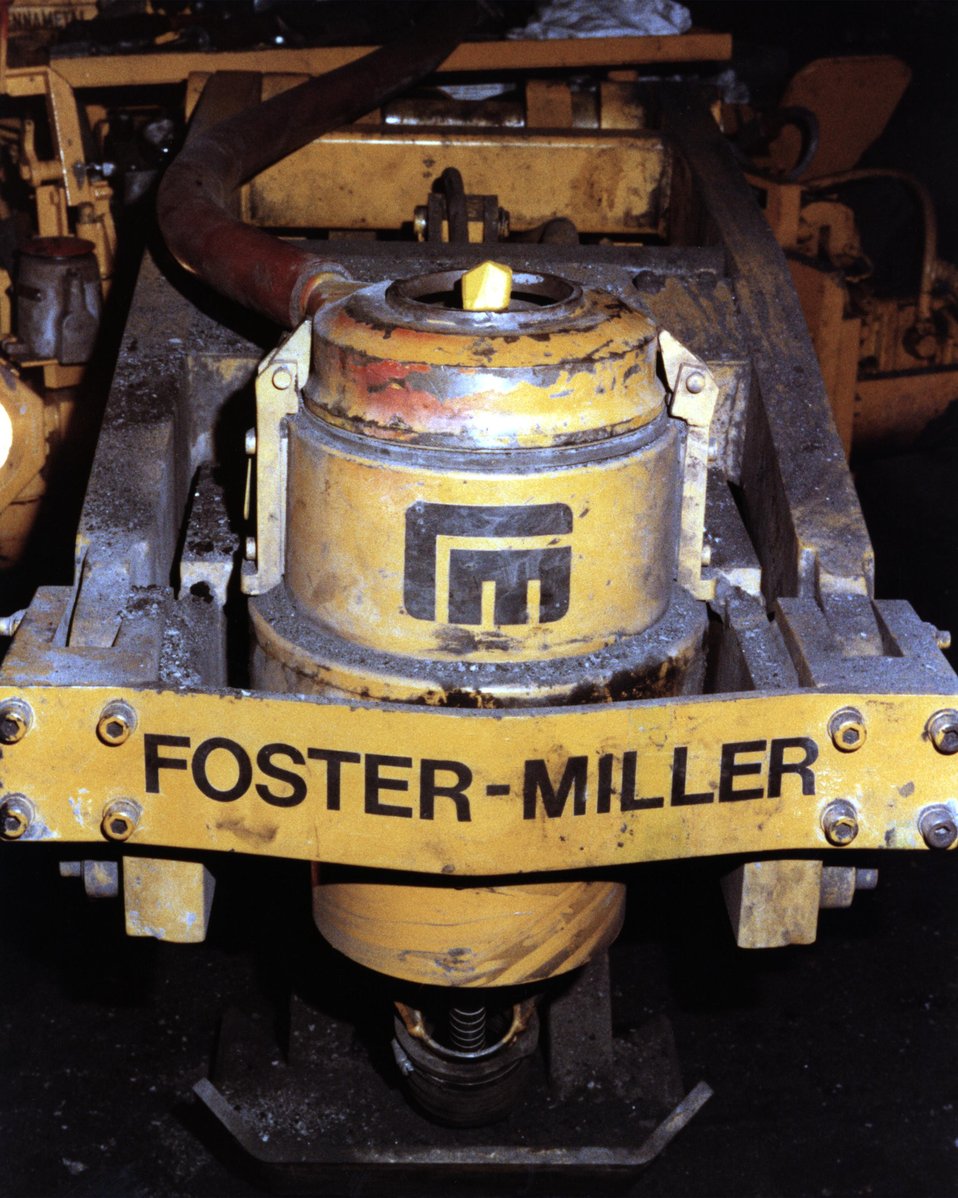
CLOSE-UP OF ROOF DRILL FROM FRONT (UNDERGROUND).

THE PREDOMINANT UNDERGROUND MINING METHOD IN THE U.S. IS THE 'ROOM AND PILLAR' METHOD, A TERM DERIVED FROM THE MINING PATTERN OF A SERIES OF EXCAVATED AREAS (ROOMS) AND UNEX- CAVATED AREAS (PILLARS) WHICH ARE LEFT TO SUPPORT THE ROOF. A MAJOR INCREASE IN PRODUCTION AND EFFICIENCY COULD BE ACHIEVED BY INTEGRATING THE ROOF SUPPORT AND EXTRACTION FUNCTION.